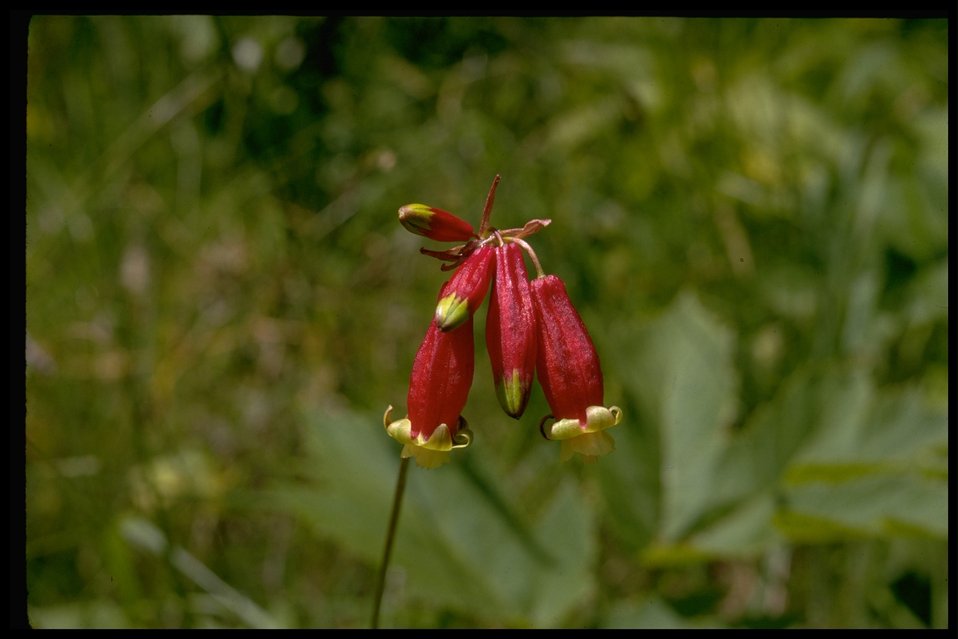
Dichelostemma ida-maia, commonly known as Fire Cracker Plant.